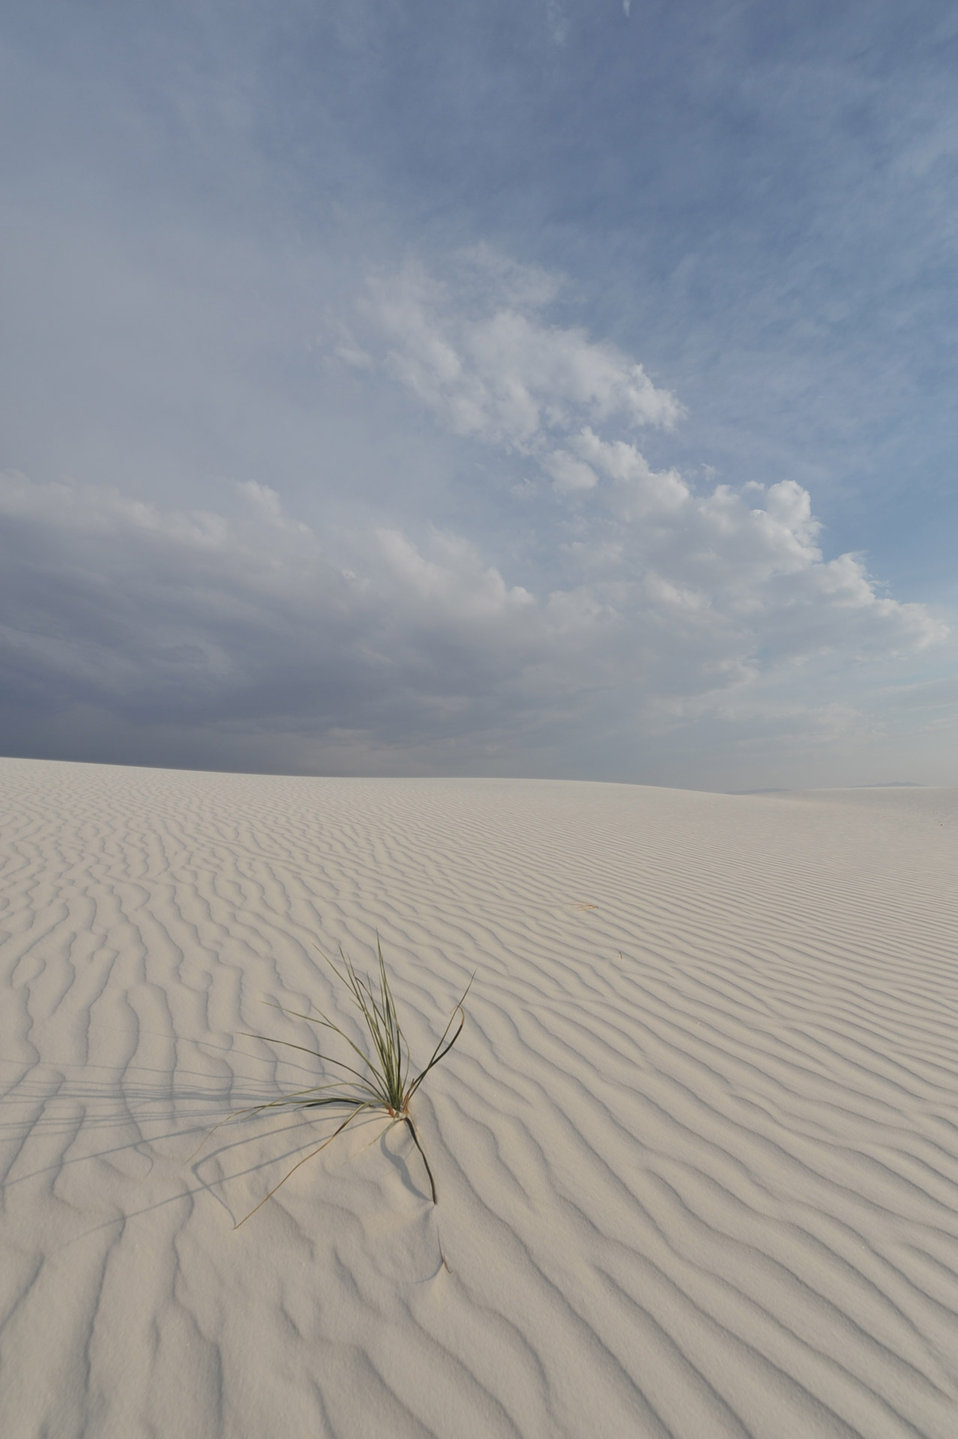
The grass of white sands 4

White sands national monument,new mexico.